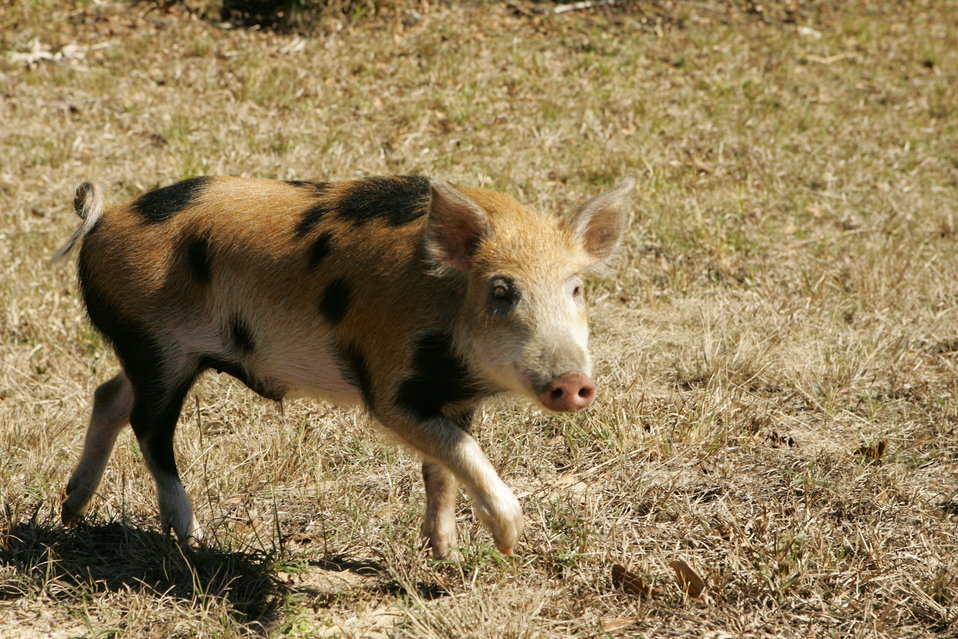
wild hog

A wild hog runs across a field at Lower Suwannee National Wildlife Refuge in Florida. Wild hogs are iinvasive animals that damage native plants and crops.